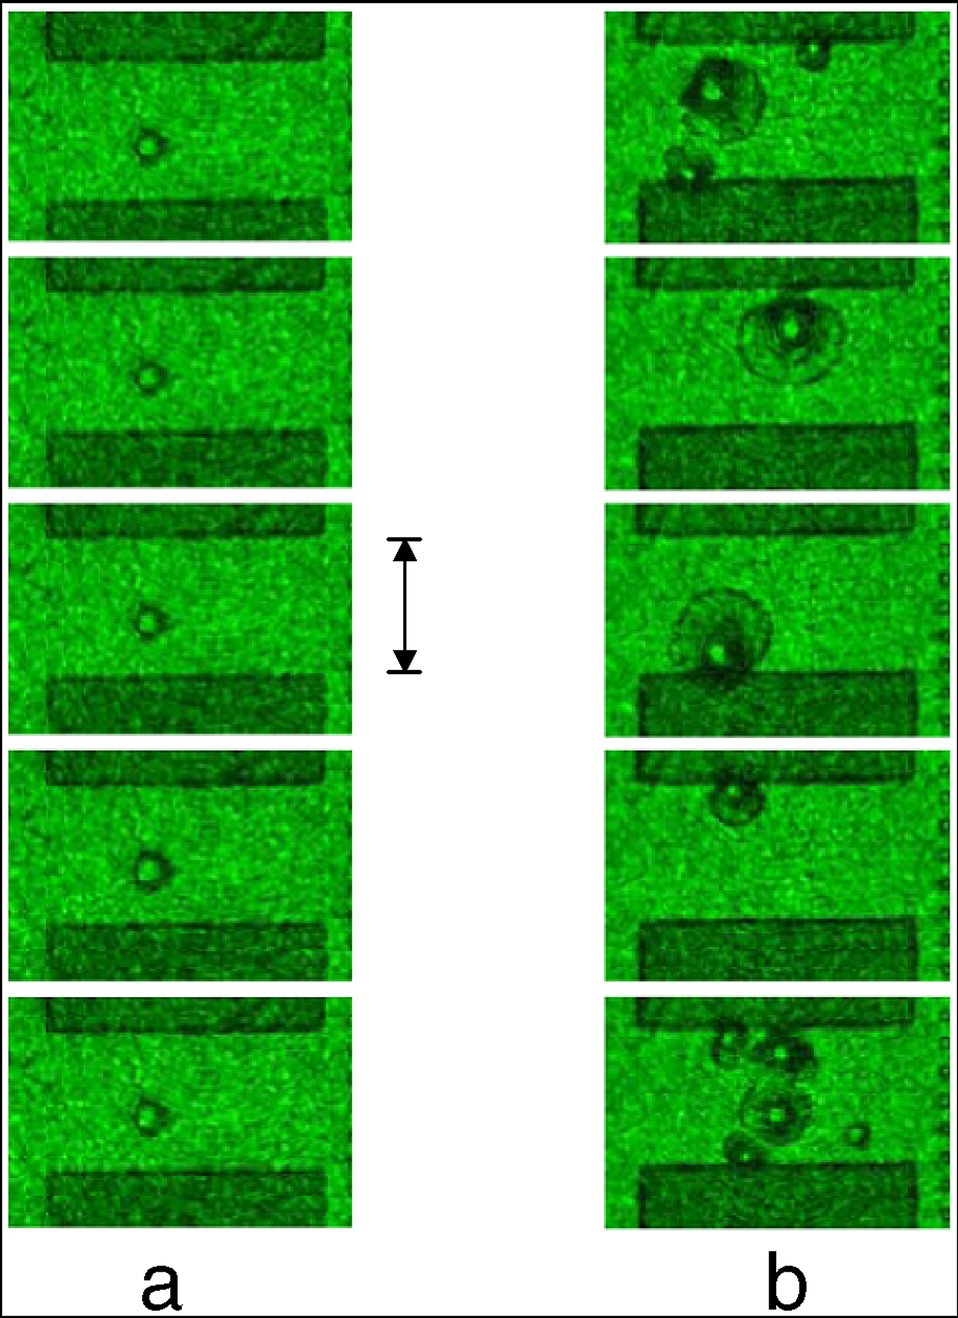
Traces of Nanobubbles Determine Nano-boiling

Ultra-highspeed photographs of microbubbles forming on a microheater show the effect of residual nanobubbles between heating pulses. The first pulse of a two-pulse sequence (a) produces nearly identical microbubbles time after time, but the second pulse (b) produces a random assortment of bubbles of varying sizes. Vertical bar shows a distance of 15 micrometers.